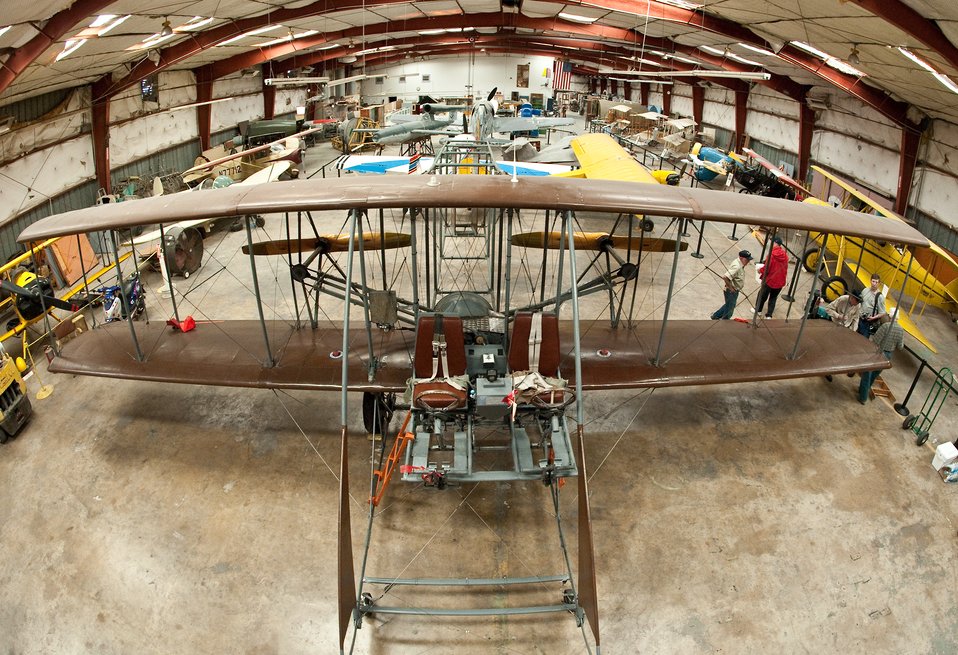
Wright

Texas Air Museum is hosting maintenance and flight operations for